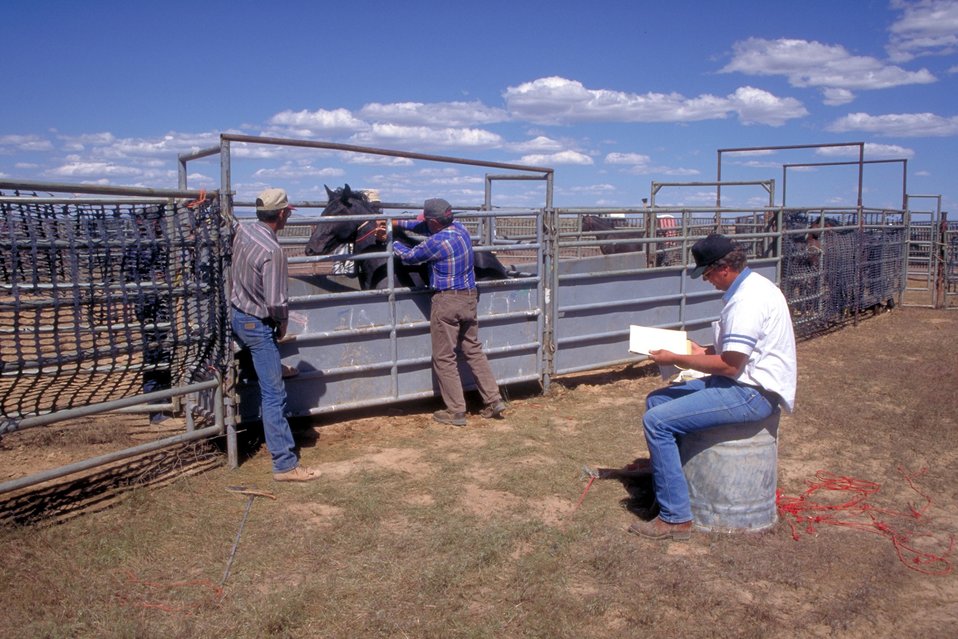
EIA testing near Vernal, Utah.